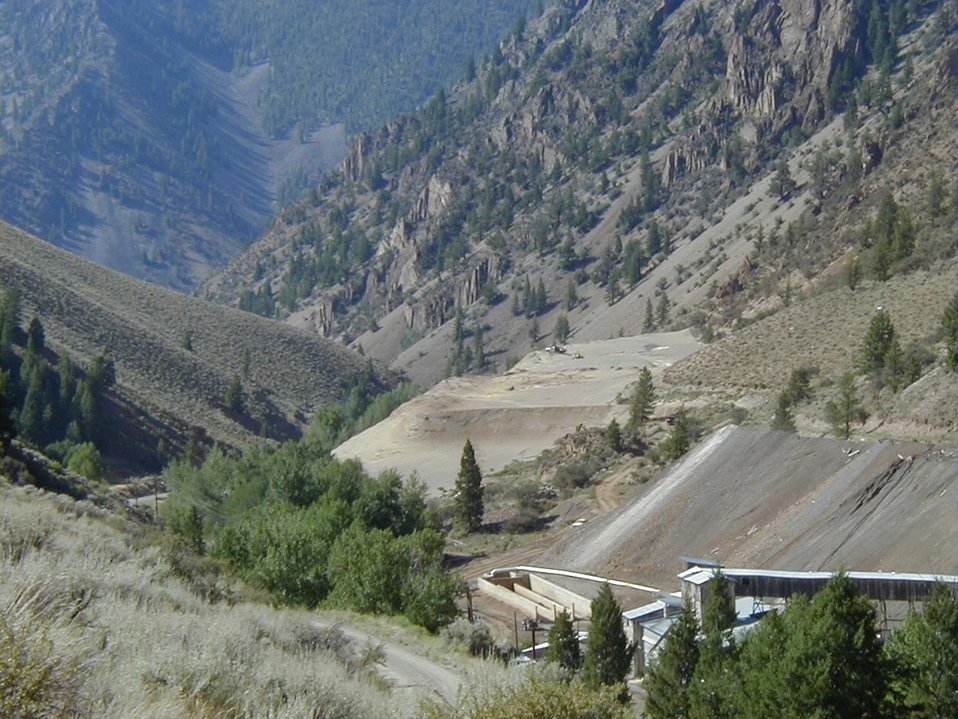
Clayton Silver Mine Tailings Central Idaho Upper Columbia-Salmon Clearwater District